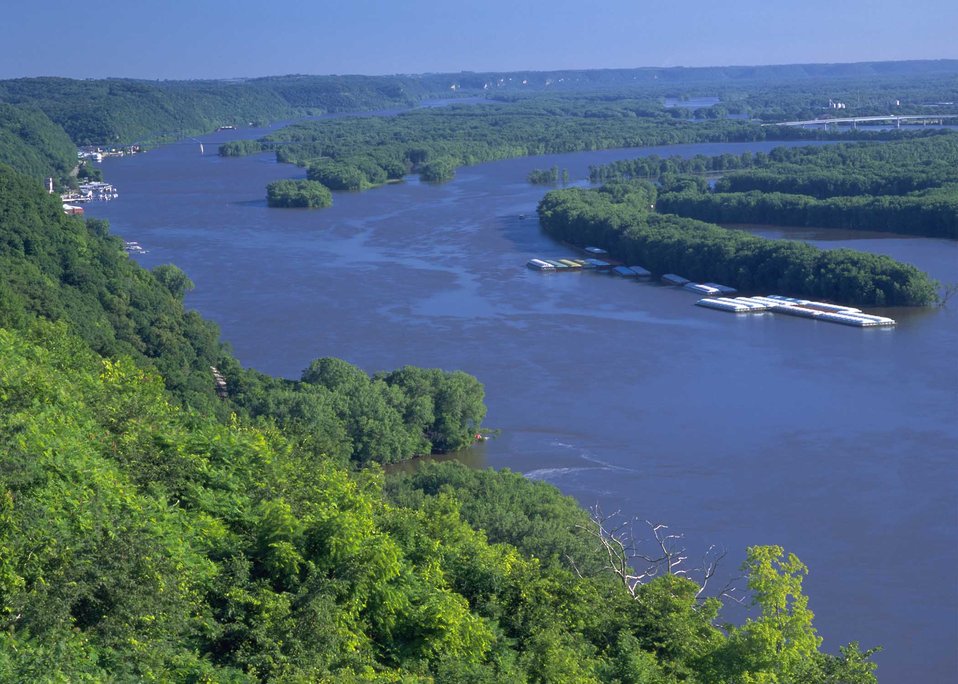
Upper Mississippi River Watershed- Wisconsin.